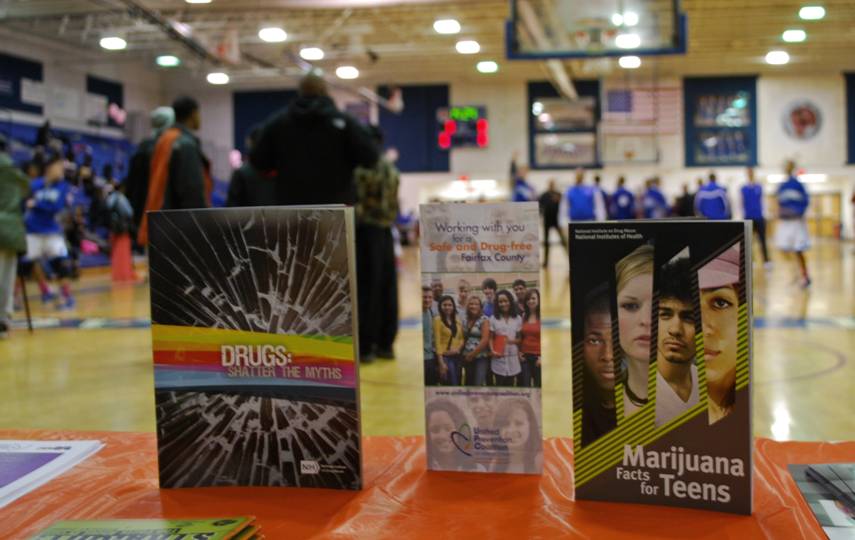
Youth Council of the Unified Prevention Coalition of Fairfax County